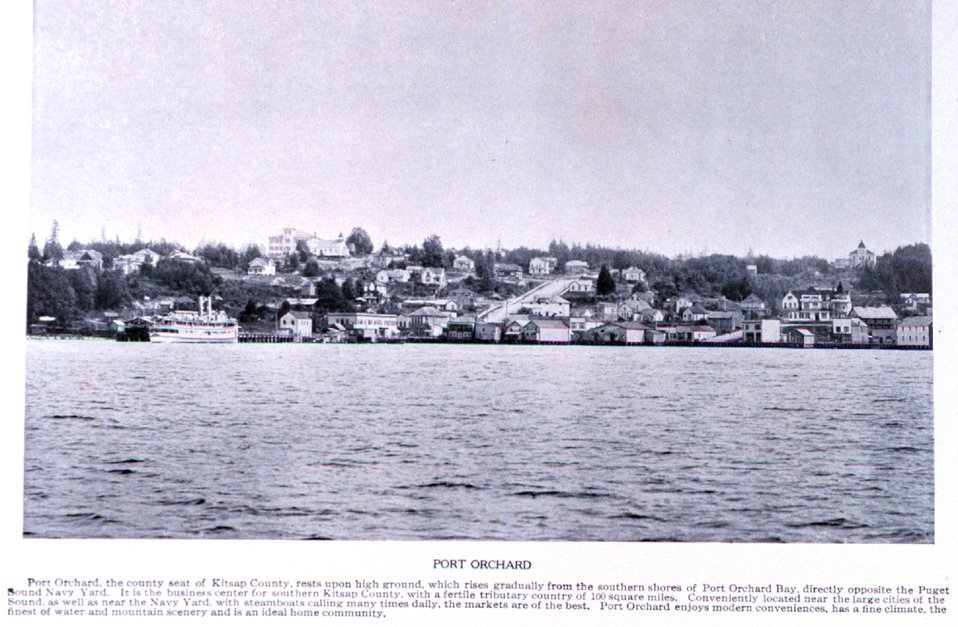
'Port Orchard' in Puget Sound. In: 'Puget Sound and Western Washington Cities-Towns Scenery', by Robert A. Reid, Robert A. Reid Publisher, Seattle, 1912. P. 148.